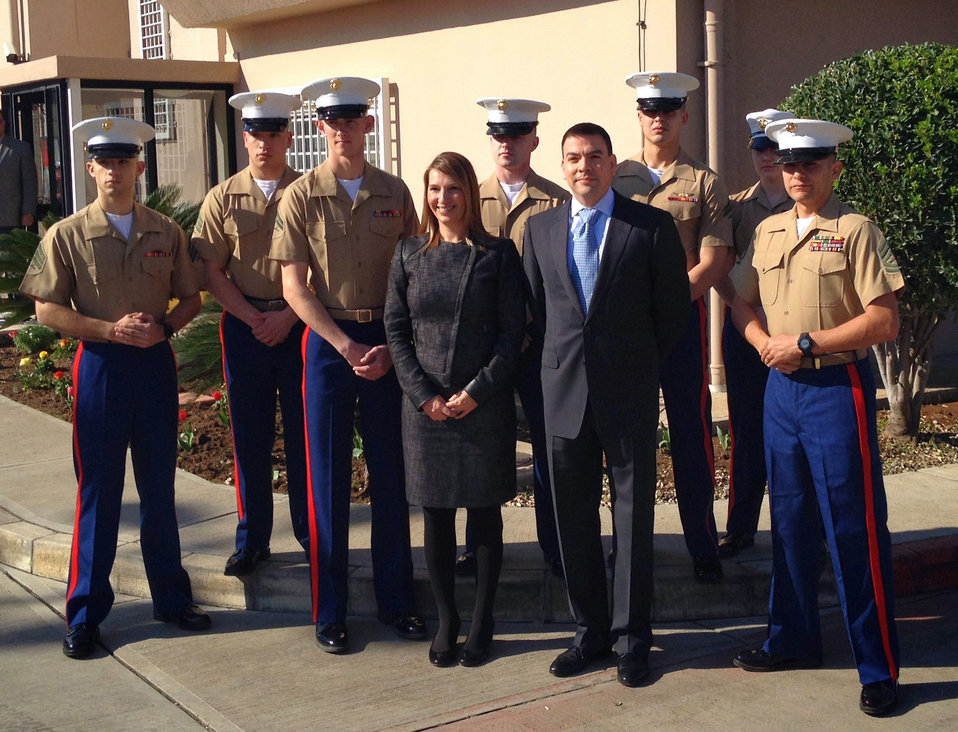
Deputy Secretary Higginbottom Poses for a Photo With Marine Security Guards

Deputy Secretary of State for Management and Resources Heather Higginbottom and Principal Officer John Espinoza pose for a photo with new Marine Security Guards at the U.S. Consulate in Adana, Turkey, on March 21, 2014.